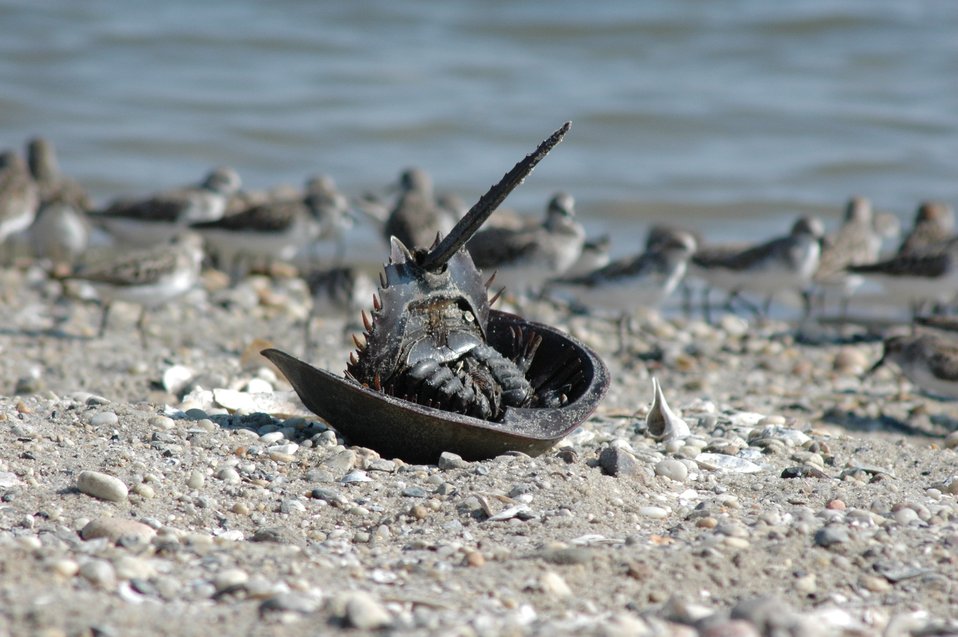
Horseshoe Crab

Mispillion Harbor, Delaware.